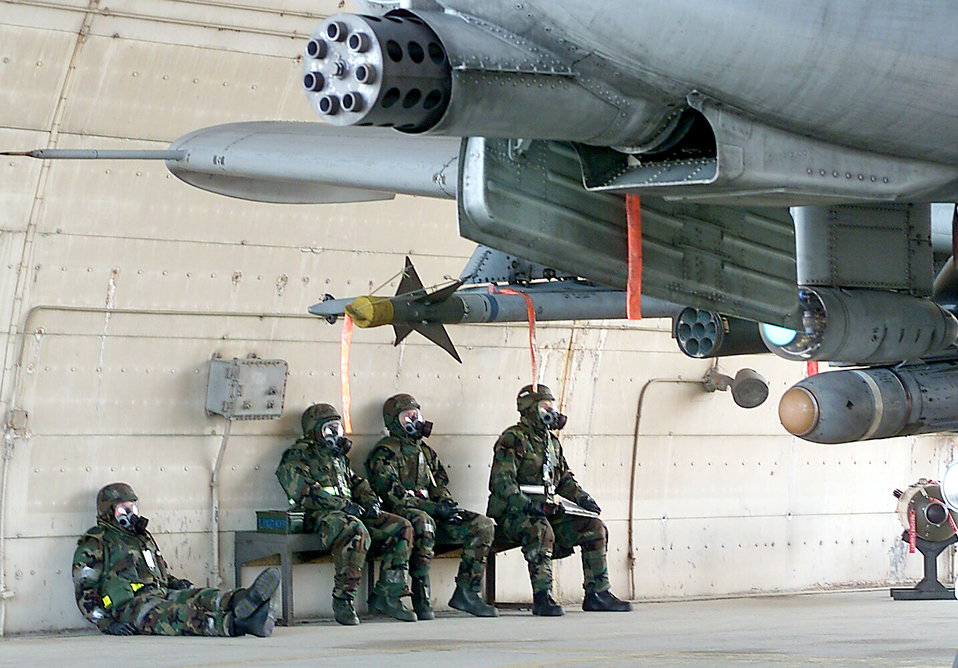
Hanging out with the 'Hawg'

OSAN AIR BASE, South Korea -- (Left to right) Senior Airman Edward Connell, Staff Sgt. Adrian Sanders, Senior Airman Dusty Surber and Master Sgt. Shayne Murphy take shelter in a hangar during a chemical exercise here. The Airmen are assigned to the 51st Aircraft Maintenance Squadron.